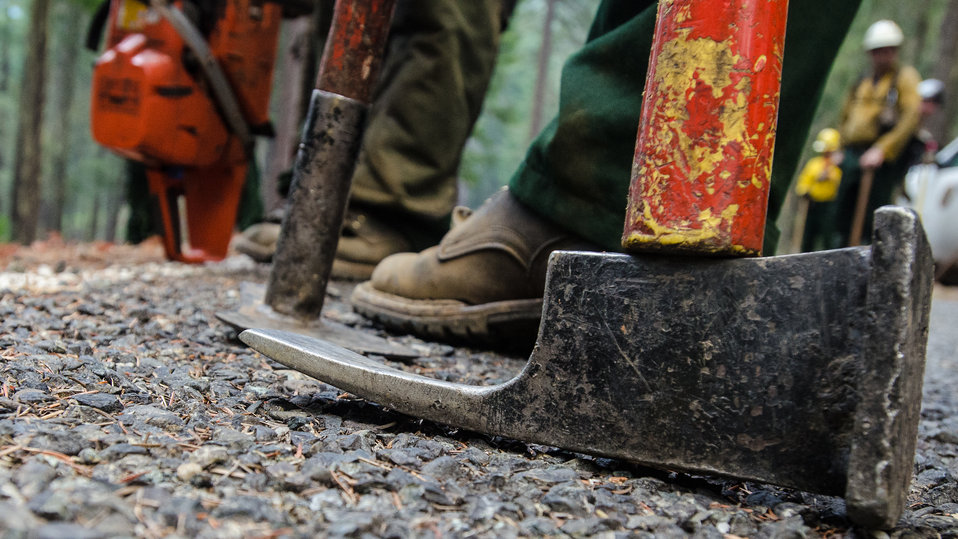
Geronimo Interagency Hotshot Crew, Department of the Interior (DOI) Indian Affairs (IA) Bureau of Indian Affairs (BIA) San Carlos Agency in Arizona; on assignment at the Big Windy Complex Wildlands Fire, approximately 15 miles west of Interstate-5 and East Northeast of Galice, Oregon, conducts a prescribed burn 'burnout' operation to help stop the main fire that may head toward this roadway, on Friday, Aug 9, 2013. The primary mission of the Interagency Hotshot Crews (IHC) is to provide a safe, organized, mobile and highly skilled hand crew for all phases of wildland fire suppression. The arduous duties and specialized assignments required of IHC personnel require uniform staffing, certification, training, equipment, communications, transportation, organization, and qualifications that adhere to interagency standards and guidelines.